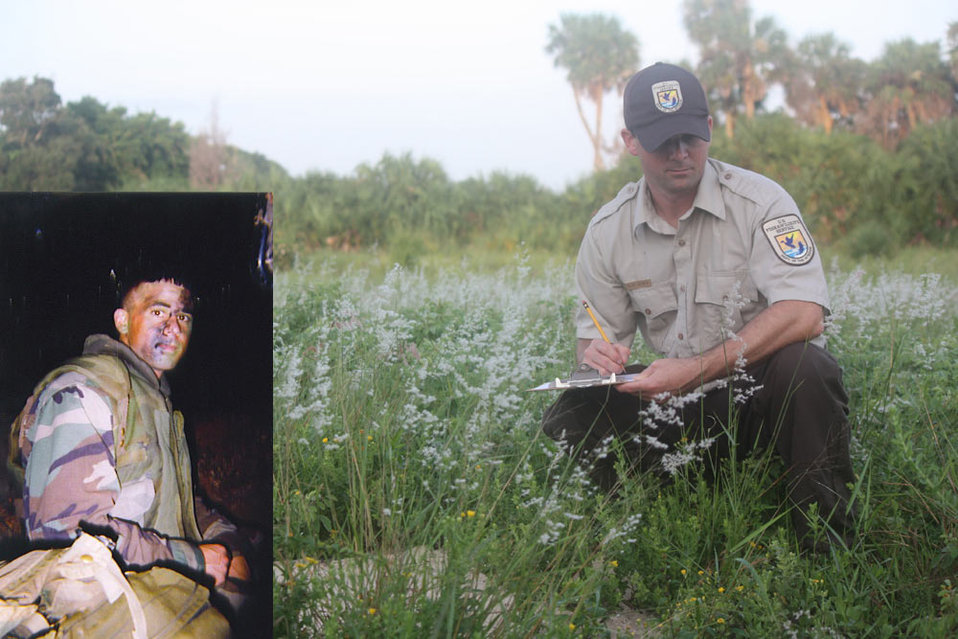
Andrew 'Maury' Eastwick-Southeast Region

After graduating from Clemson University, class of 1998, with a BS in Wildlife Biology, Andrew “Maury” Eastwick IV decided to join the officer ranks of the United States Marine Corps. He served with 1st Battalion 8th Marines and the 22nd Marine Expeditionary Unit which included work during a Mediterranean deployment, as well as, training in Tunisia, Spain, Italy and Croatia. He later conducted transport support operations in Camp Lejeune, NC. Then, in 2002, as his military commitment ended, he pursued opportunities in “Corporate America” where he worked in Territory Management for a pharmaceutical company and Operations Management with a large retail company for 9 years. Throughout this period he consistently felt a yearning to play a larger part in the world’s effort to conserve its natural resources. Consequently, with this passion for conservation and his love and admiration for fish and wildlife, he left the corporate world behind in 2011 and pursued the career that he always dreamed of -- to help conserve our nation’s precious natural resources by working with the U.S. Fish and Wildlife Service. His dream came true when he was offered a position as the Complex Biological Science Technician at Pelican Island NWR in 2011. “I am completely thrilled and honored to have this opportunity to serve our nation’s fish and wildlife by helping in their conservation,” said Eastwick. “I sincerely hope that this is the beginning of a long career with the U.S. Fish and Wildlife Service.” “What better way to begin than being a part of the first National Wildlife Refuge, Pelican Island NWR,” Eastwick continued.